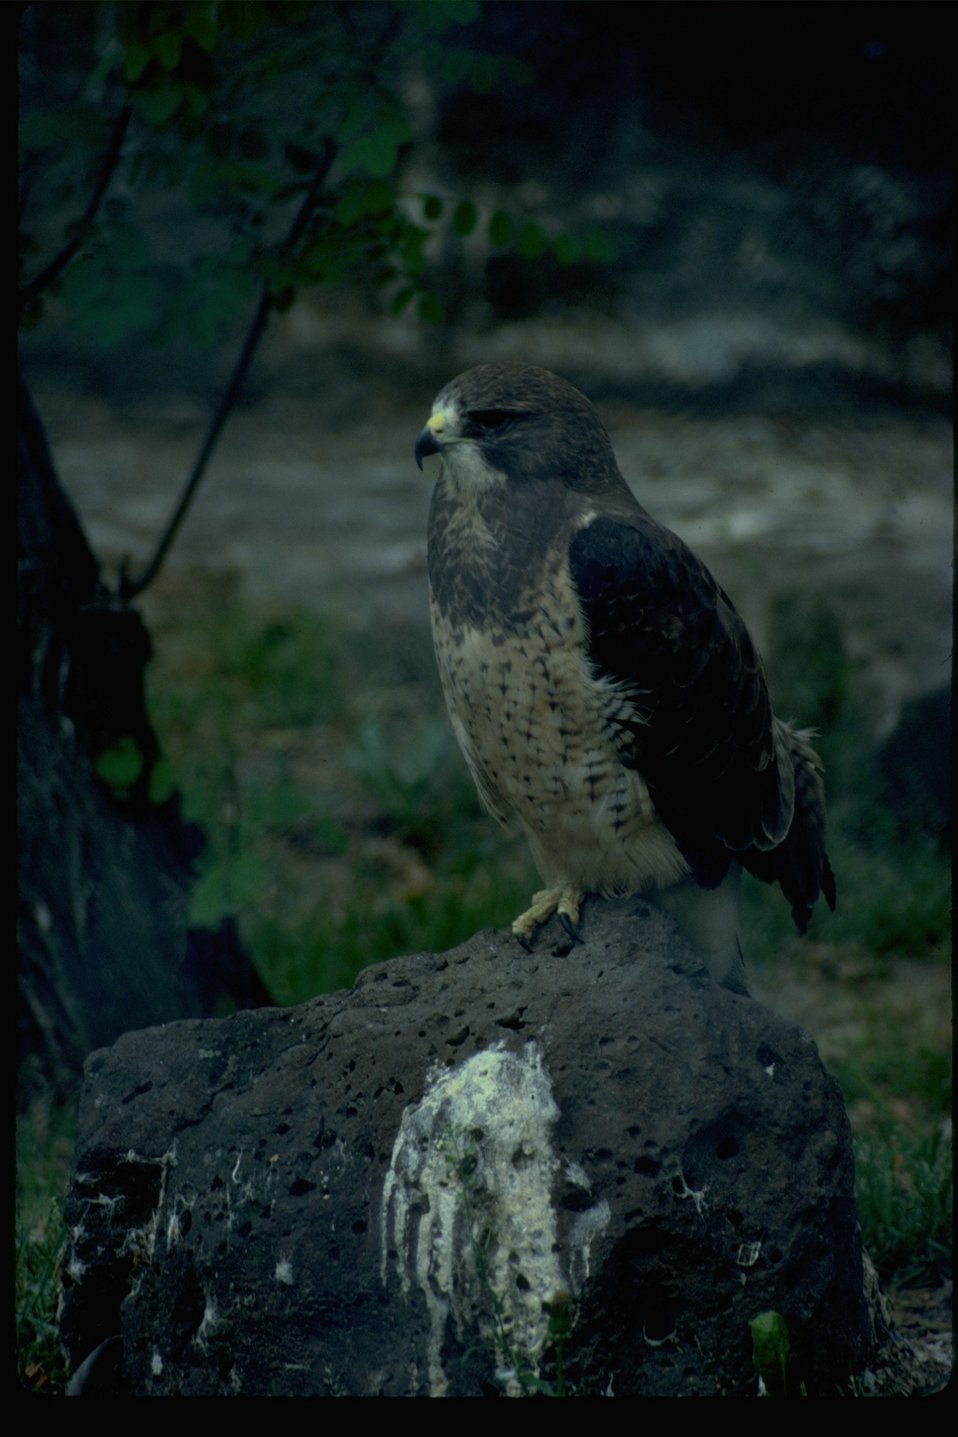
Prairie Hawk perched on a rock.